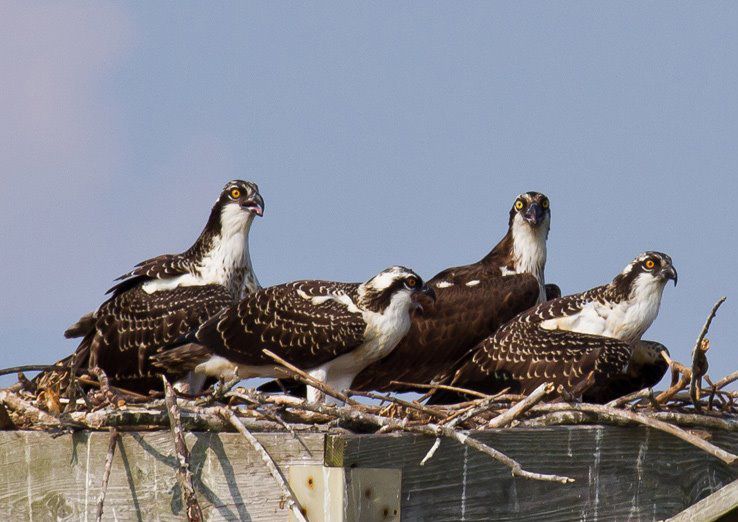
Osprey huddle

Ospreys look out from a nest at Blackwater National Wildlife Refuge in Maryland. A webcam installed near the nest gives a close-up view of bird activity in nesting season.